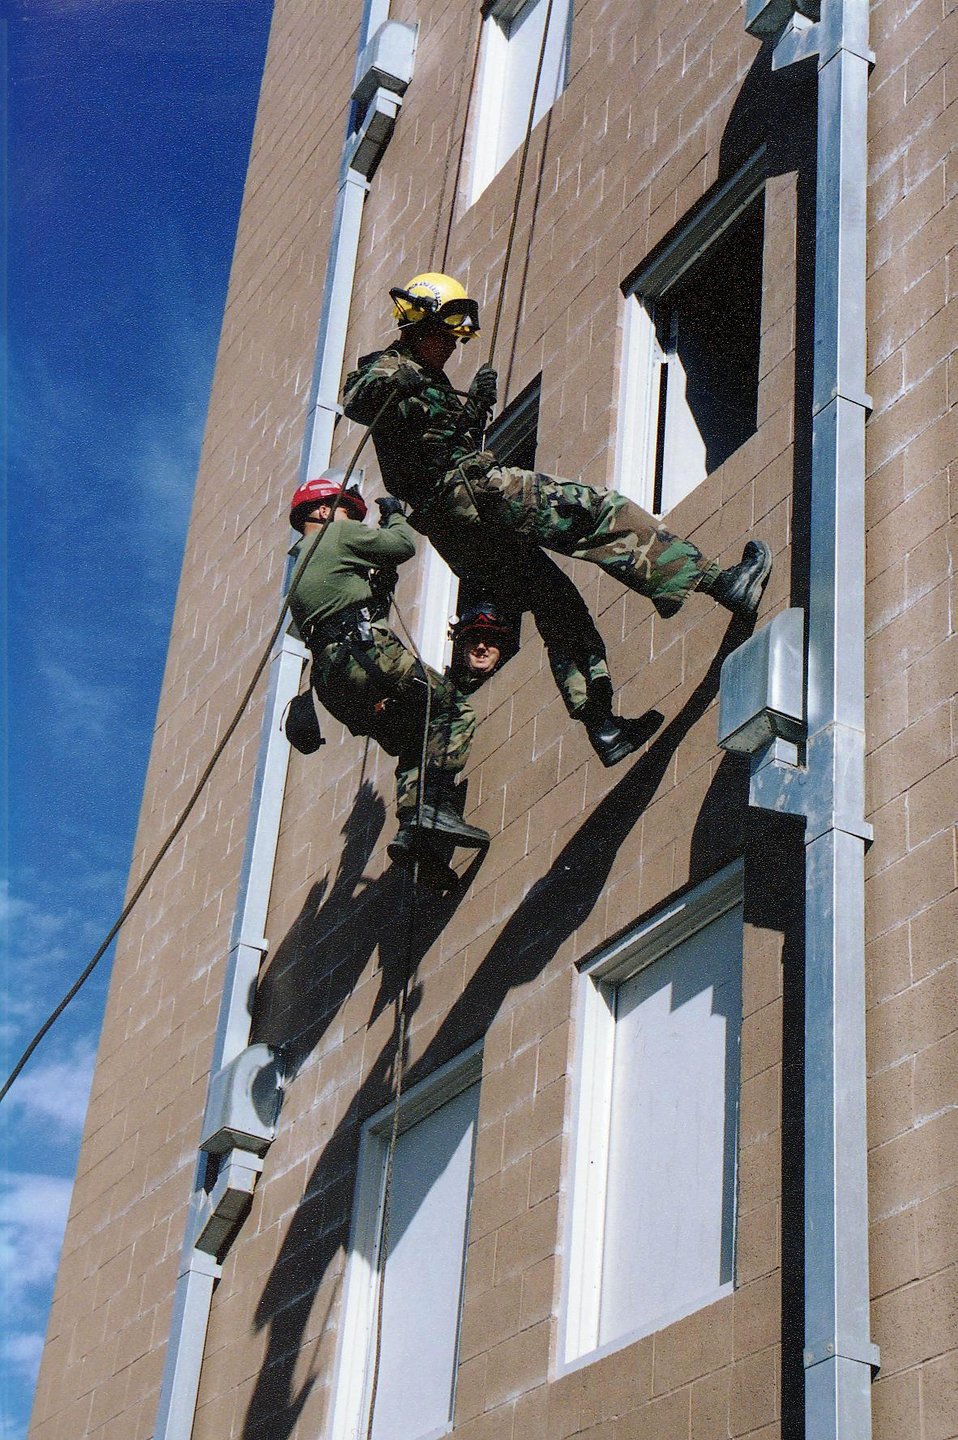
U.S. MARINE CORPS CHEMICAL BIOLOGICAL INCIDENCE RESPONSE FORCE PERSONNEL PRACTICE REPELLING.

THE MARINES ARE RAPPELLING FROM HAMMER'S SIX STORY TRAINING TOWER AS PART OF HOMELAND SECURITY TRAINING. THE HAZARDOUS MATERIALS MANAGEMENT AND EMERGENCY RESPONSE CENTER (HAMMER), IS A TRAINING FACILITY LOCATED IN RICHLAND, WASHINGTON. HAMMER AREAS OF EXPERTISE INCLUDE EMERGENCY OPERATIONS, ENVIRONMENTAL AND WASTE MANAGEMENT AND RECOVERY, FIRE OPERATIONS, LAW ENFORCEMENT, NUCLEAR SAFETY, OCCUPATIONAL SAFETY AND HEALTH AND TRANSPORTATION. HAMMER PLAYS AN IMPORTANT ROLE IN HOMELAND SECURITY TRAINING.